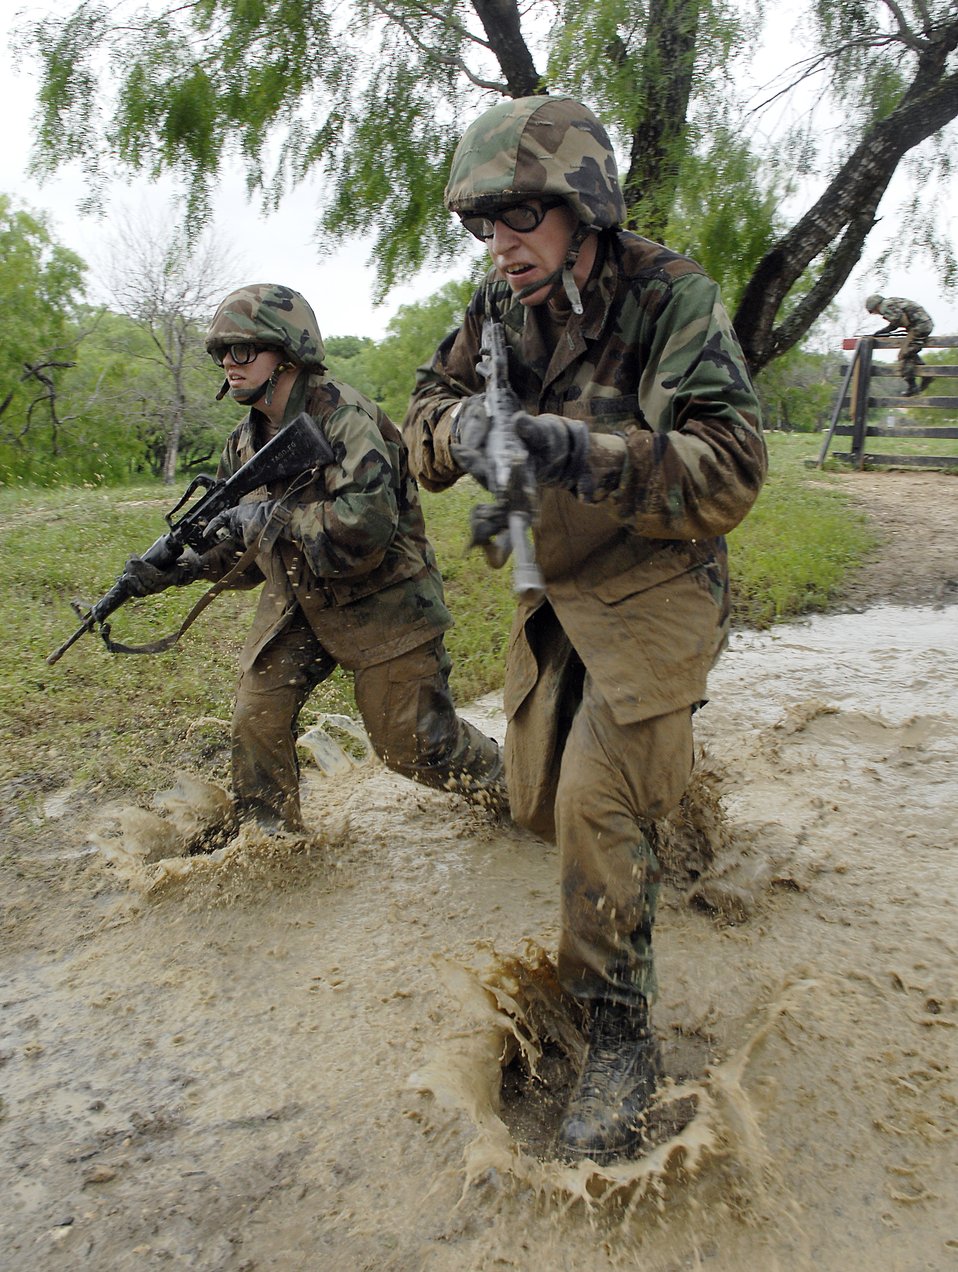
Airmen live, learn warrior ethos

Basic trainees navigate through a muddy part of the tactical assault course at the field training site on Lackland Air Force Base, Texas on May 2. This half-mile course, consisting of numerous obstacles, tests the trainees' newly-acquired defensive tactics skills and enforces the need to properly communicate with their wingmen.